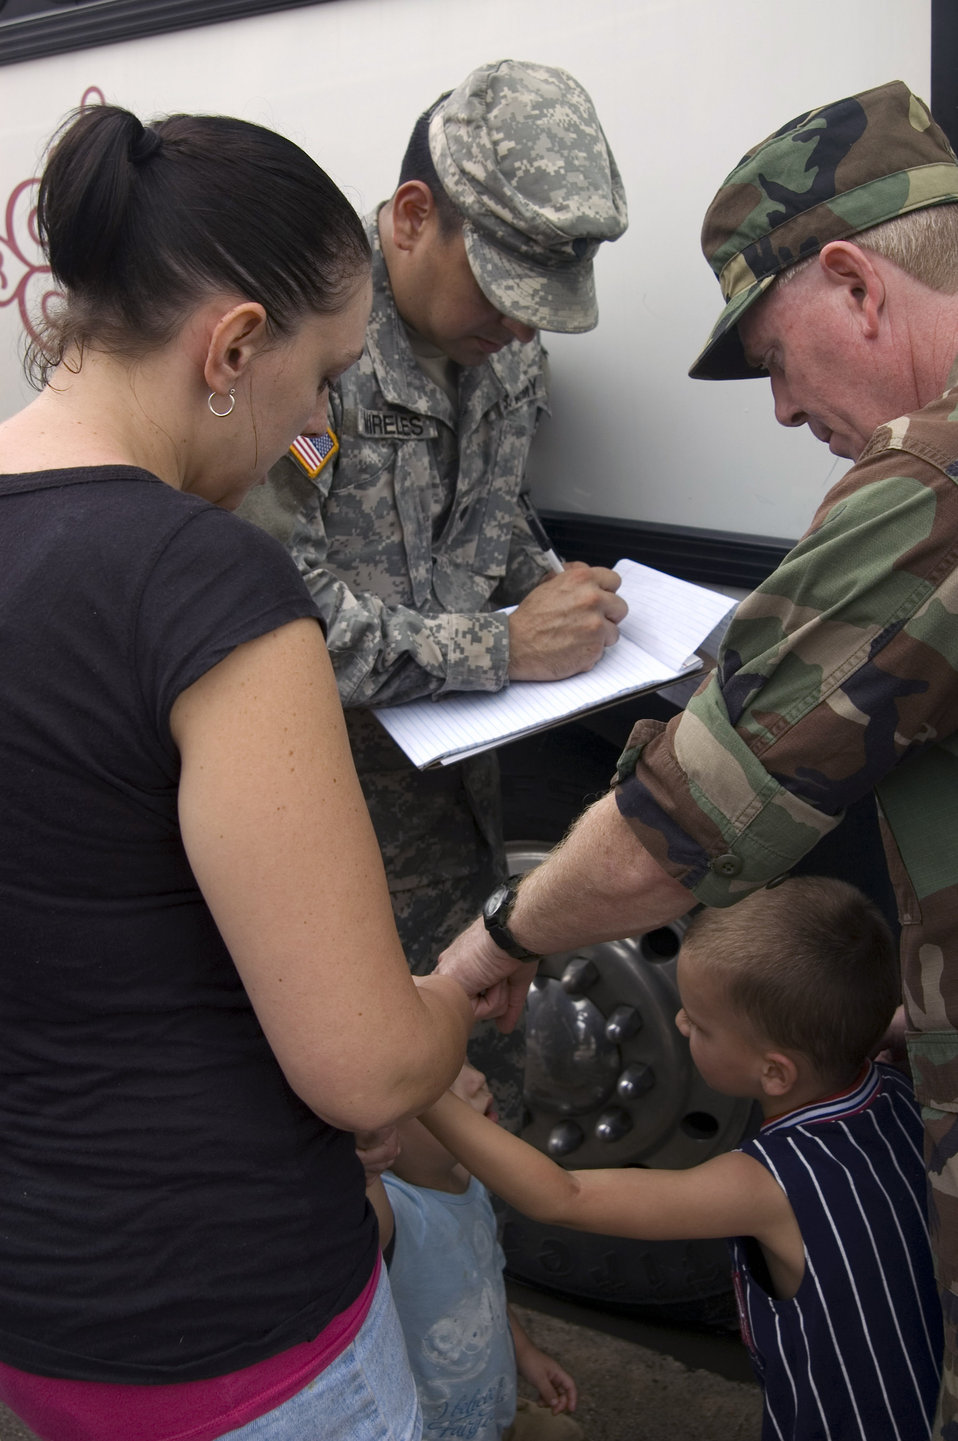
Airmen, soldiers aid people affected by Hurricane Ike

Capt. Bill Gentry took identification information from evacuees and handed out water as approximately 1,000 people boarded buses bound for San Antonio Sept. 14 at Galveston, Texas. Captain Gentry is from the 149th Medical Group, Texas Air National Guard.